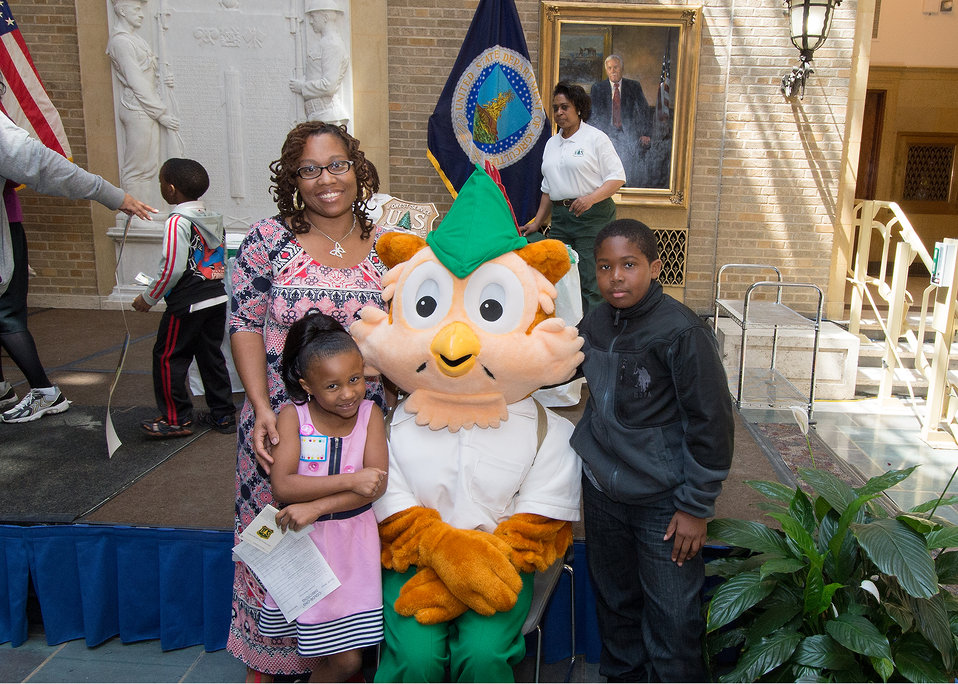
Ebony Broadwater, Camren Coleman and Darien Walker pose for a photograph with Woodsy Owl one of the U.S. Department of Agriculture (USDA) U.S. Forest Service (FS) mascots at USDA's annual “Bring Your Daughters and Sons to Work on Thursday, Apr. 24, 2014 in Washington, D.C. The event offers employees the opportunity to bring their children to work to experience what they do in their profession and offer insight into other careers at the Department of Agriculture.